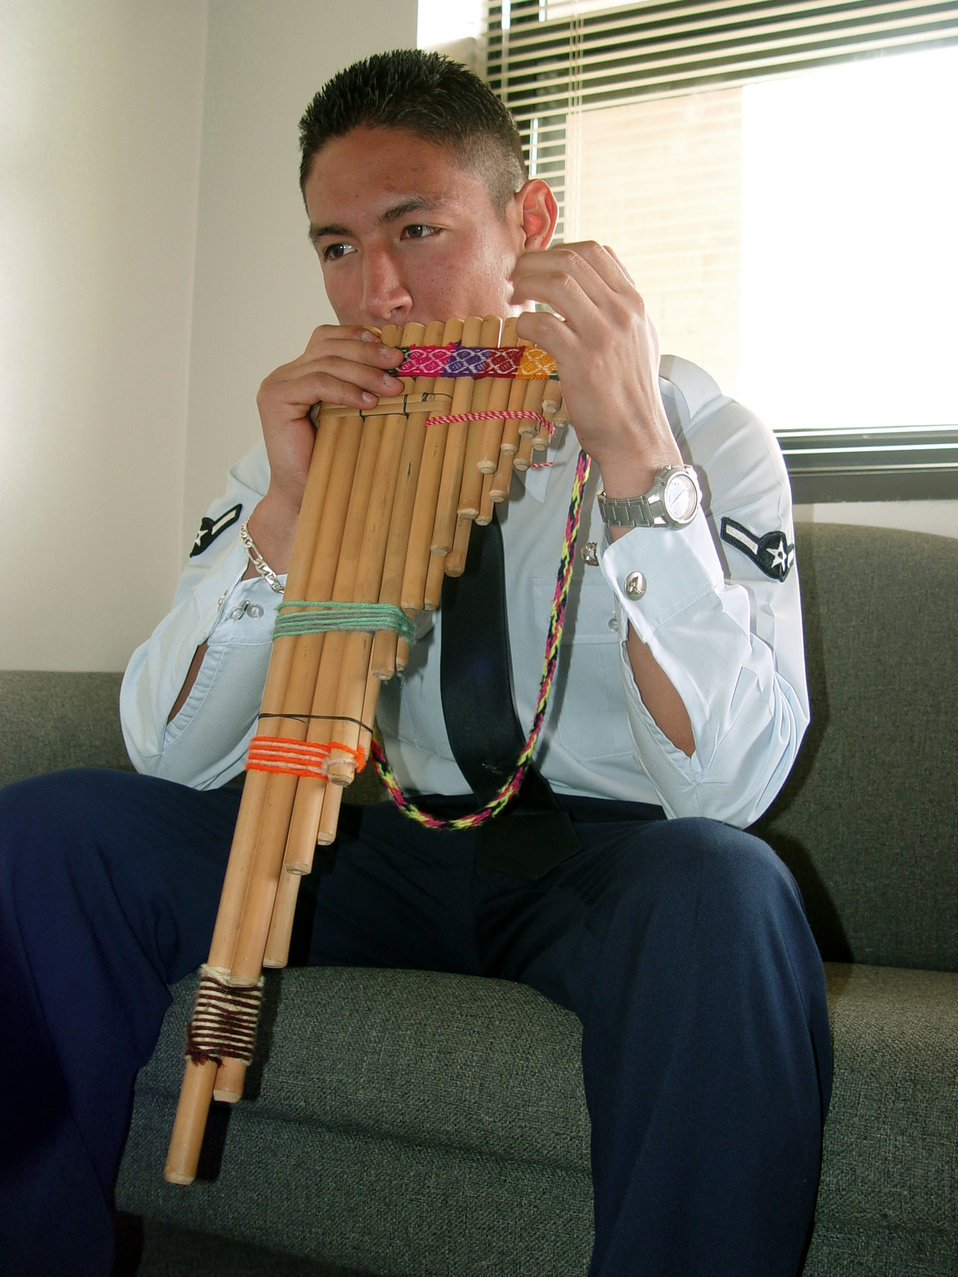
Music from home

MCCONNELL AIR FORCE BASE, Kan. -- Airman Fredy Pasco plays the zampo√±a, an Inca instrument he has been playing since he was 6 years old. He came to America from Peru on April 16, 1998, and joined the Air Force in September 2003.